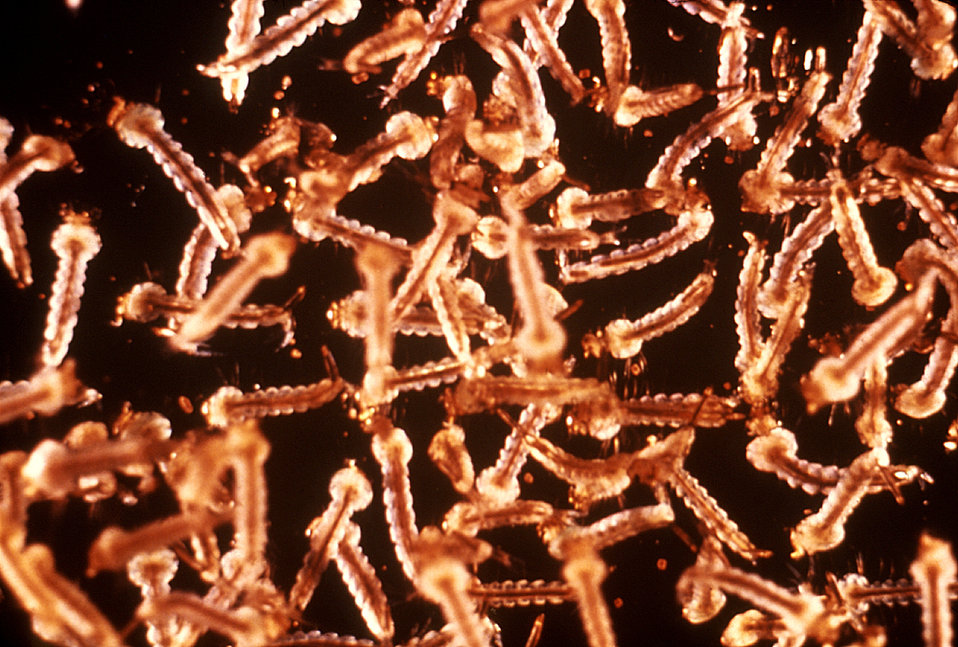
This photograph depicts a group of unidentified mosquito larvae scattered uniformly over a dark background.